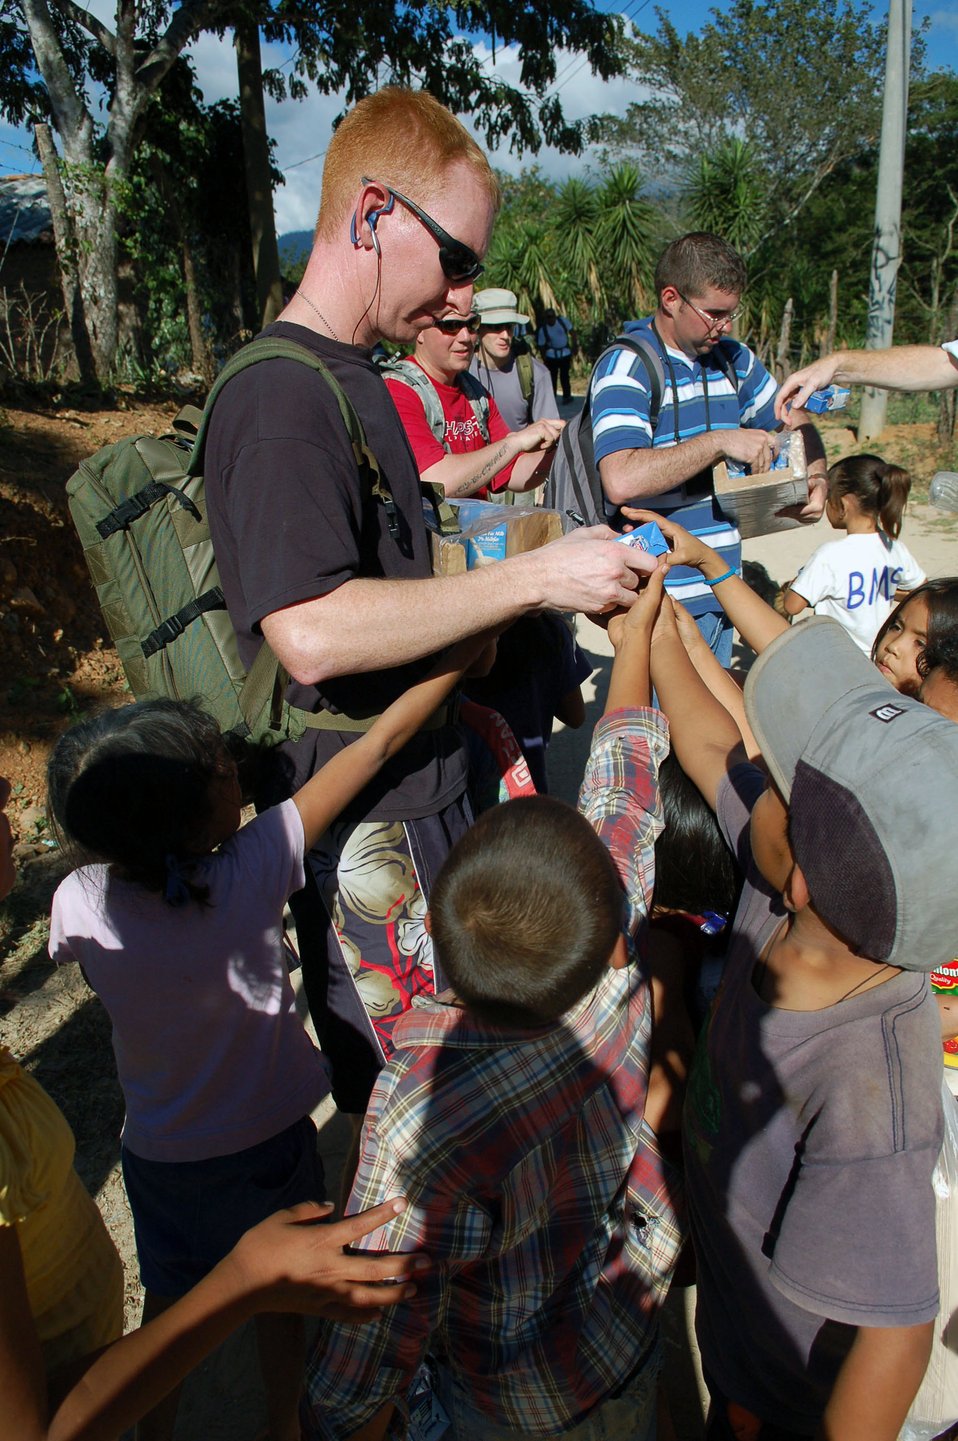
Volunteers deliver food to Honduran mountain village

Staff Sgt. Charles Alford hands milk to a crowd of children Dec. 14 in the village of Capiro, Honduras. The sergeant was one of about 60 servicemembers who attended a three-mile hike, sponsored by the JTF-Bravo chapel, to the village to deliver 600 pounds of food.